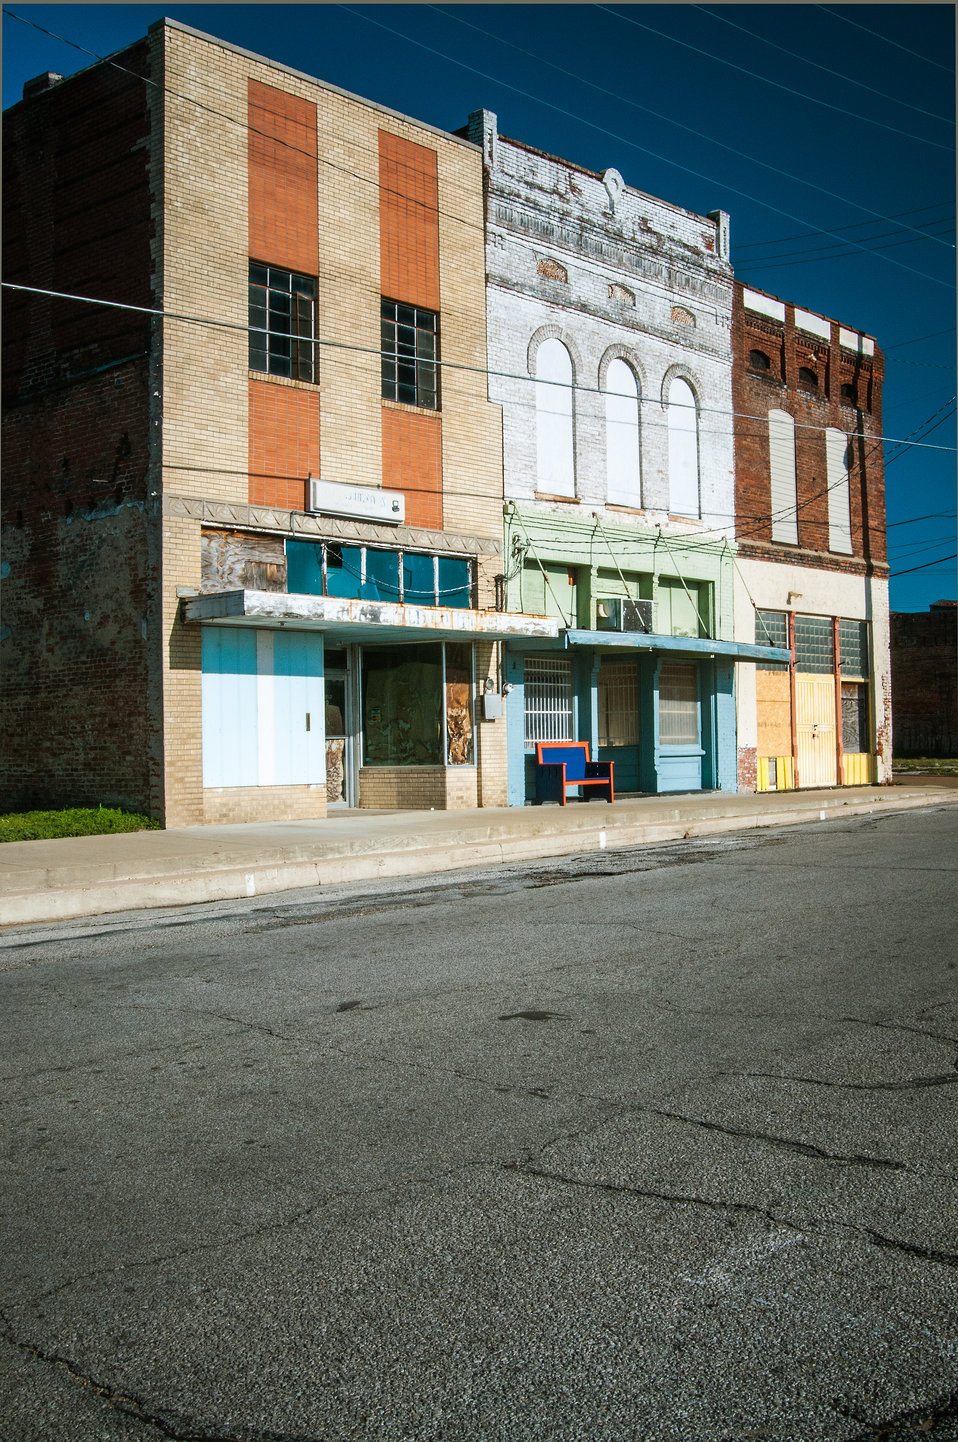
The sun shines on Forest City, AR on Mar. 5, 2013. The East Arkansas Enterprise Community, Inc. in Forrest City, AR is one of 42 community-based organizations located in high poverty areas in the U.S. to benefit from the Arkansas Delta Seeds of Change (ADSOC) Initiative. The U.S. Department of Agriculture (USDA) in partnership with Heifer International (an International organization whose mission is to work with communities to end hunger and poverty and care for the Earth) and various for-profit and non-profit organizations have put in motion the “Seeds of Change Implementation Plan” to use sustainable agriculture to build food systems in the Arkansas Delta. The program has evolved into the ADSOC Initiative.